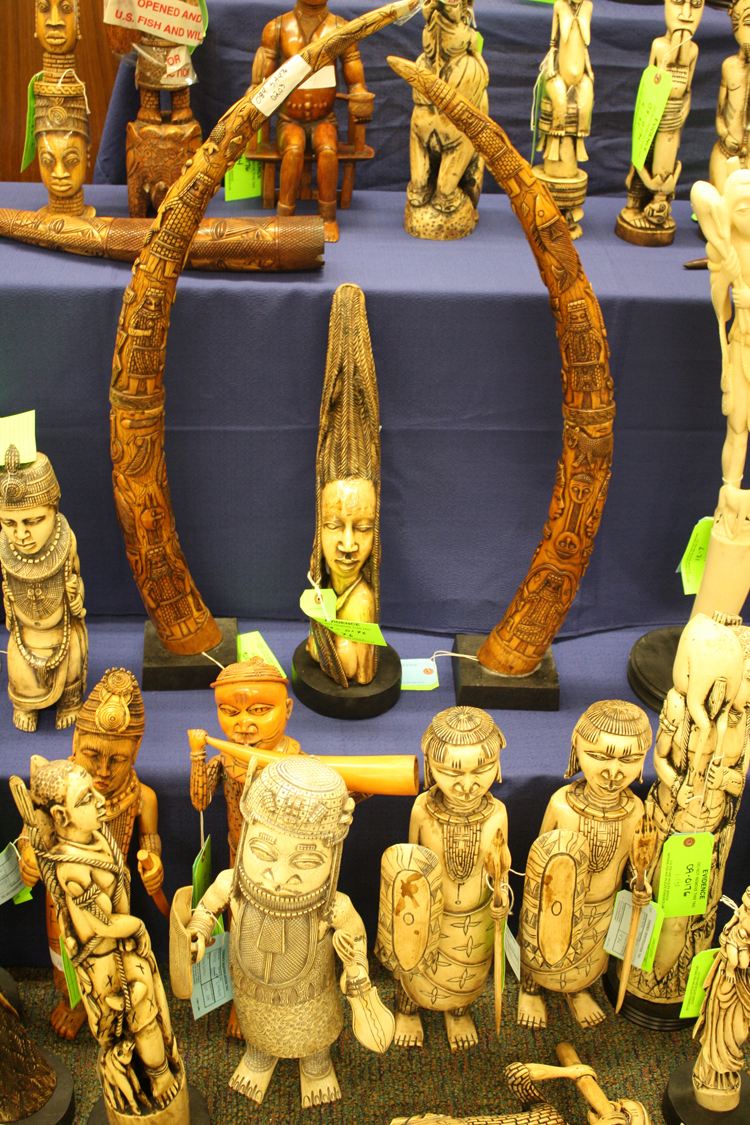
Photo of the Week - Carved Ivory (MA)

Photo of the Week - 11/18/13

The United States is sending a message to ivory traffickers and their customers that we will not tolerate this illegal trade.